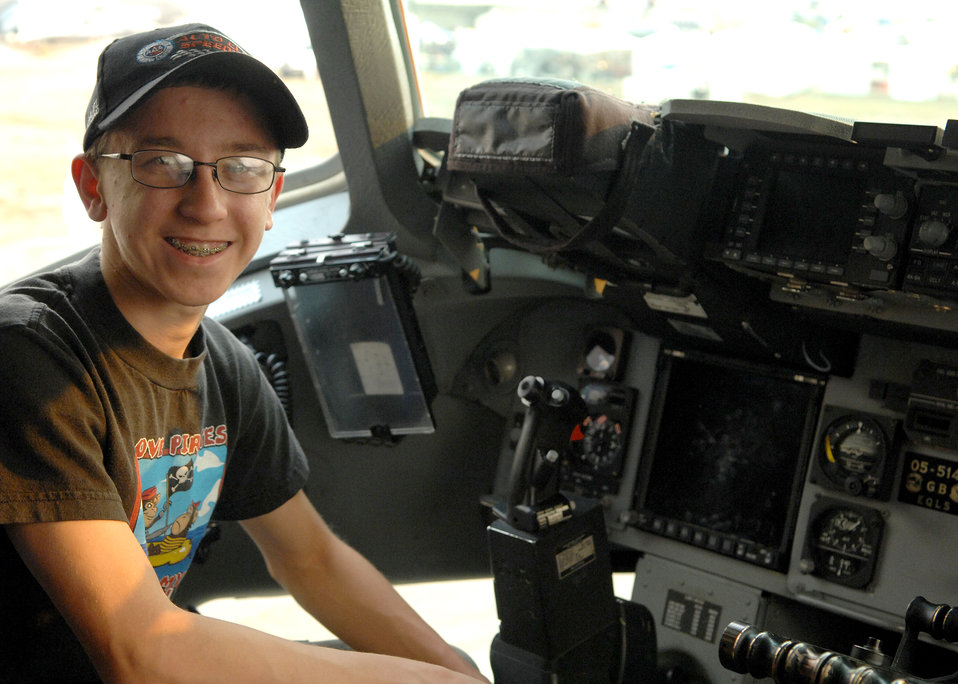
Wings over Long Beach

Andrew Young of Lakewood, Calif., checks out the cockpit of a C-17 Globemaster III during the Wings Over Long Beach airshow Nov. 15 at Long Beach Airport, Calif. The airshow was part of Air Force Week Los Angeles to showcase the Air Force, its people and the mission throughout the region.